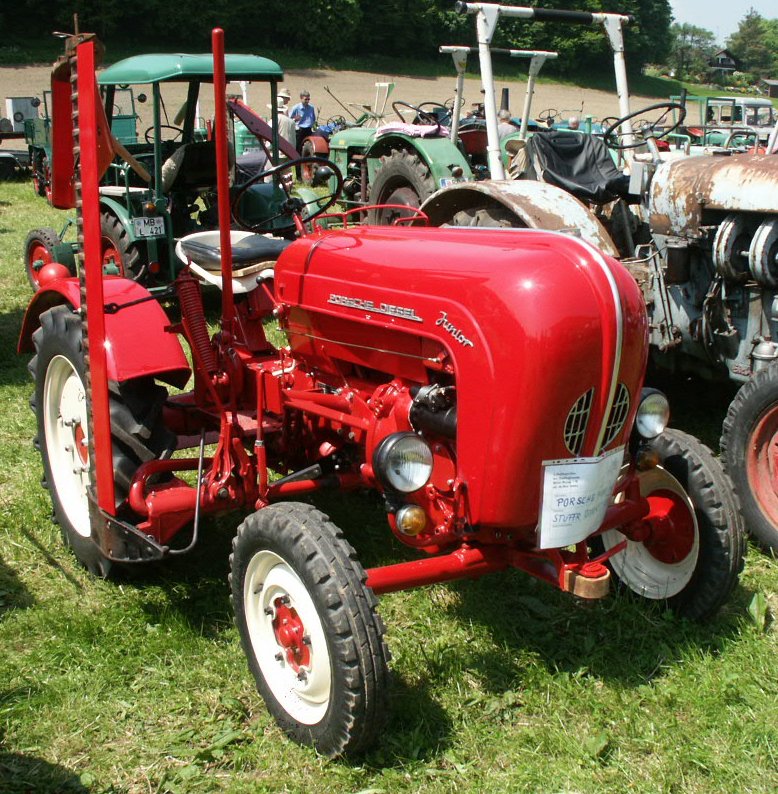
Deutsch: 1958 Porsche-Diesel Junior F108, Baujahr 1958